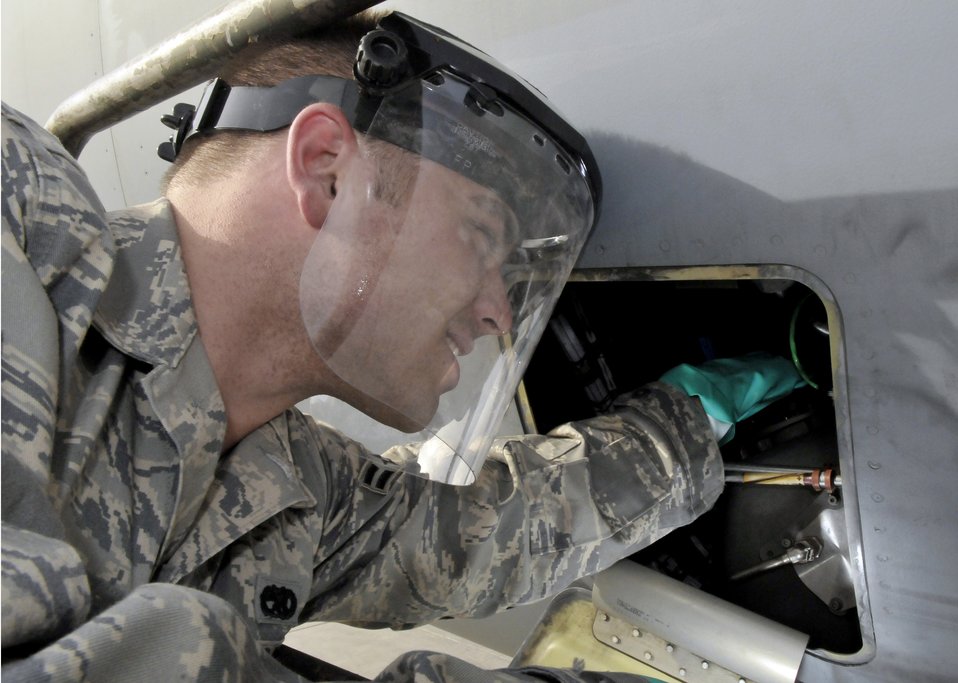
C-17 maintenance crew

Airman 1st Class David Reynolds checks the oil on a C-17 Globemaster III engine July 12, 2010, at Joint Base Balad, Iraq. Airman Reynolds, a native of Huntley, Ill., is deployed from Joint Base McGuire-Dix-Lakehurst, N.J.